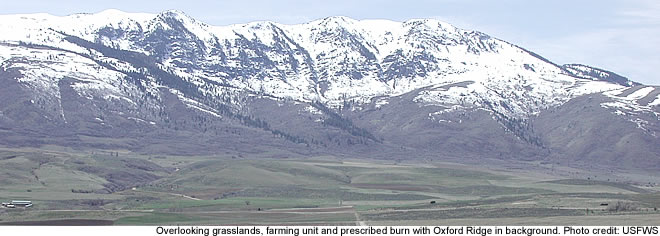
Oxford Slough Waterfowl Production Area

The FWS management of this unit deals with a permittee who maintains food crop areas of barley for migratory bird use. The area also has planted DNC (Dense Nesting Cover) composed of taller native grasses which is used heavily by nesting birds and provides safer nesting from predators.The western portions of the unit are hayed to maintain wet meadow areas and wildlife foraging habitat and also provides a fire break for any fires that may occur during the summer that may threaten Oxford.